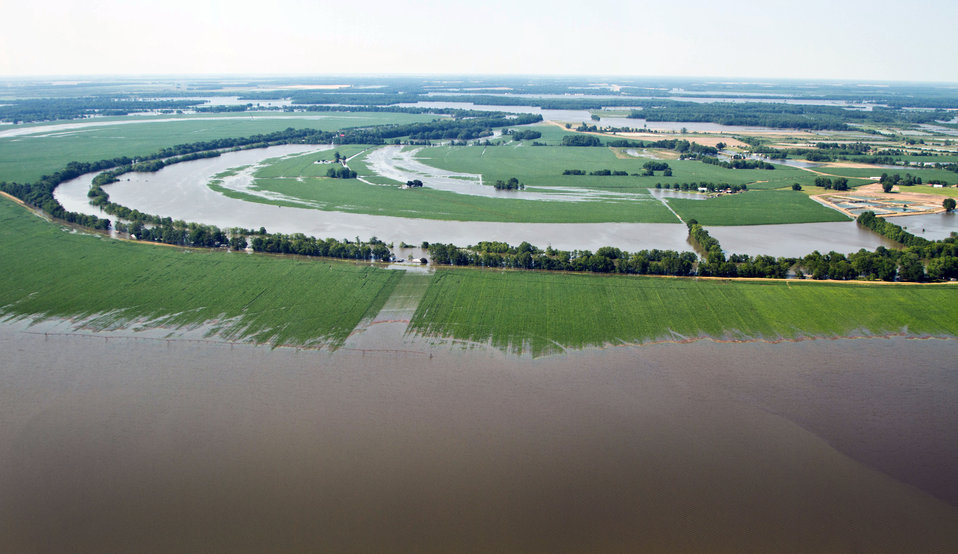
An aerial photograph showing the Mississippi River flood levels and the inundation of floodwaters on farm, wilderness, and populated areas, on Thursday, May 19, 2011photographed from the MS side.